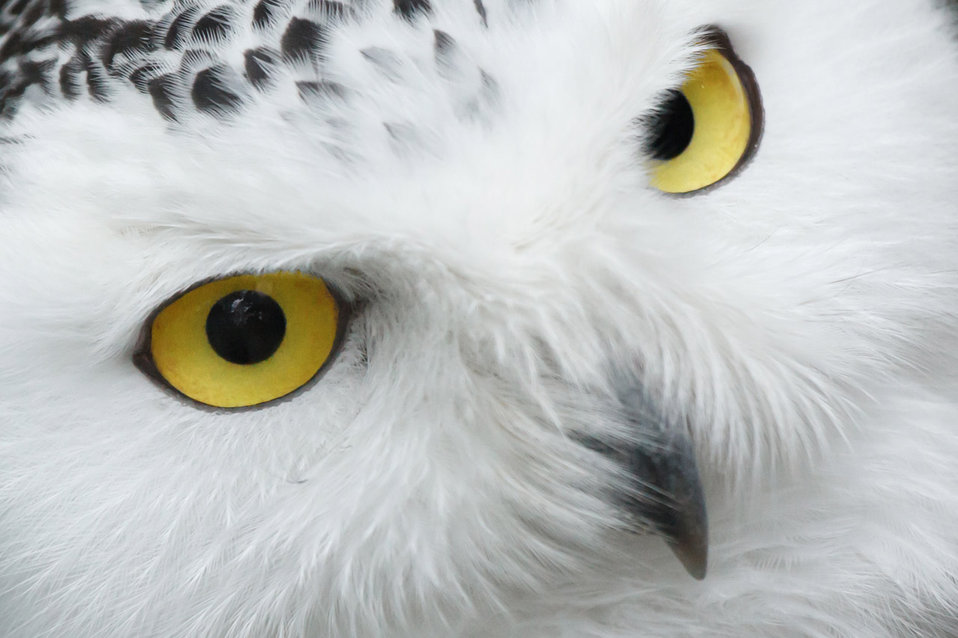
Snowy owl eyes

Snowy owl's eyes - bubo scandiacus.